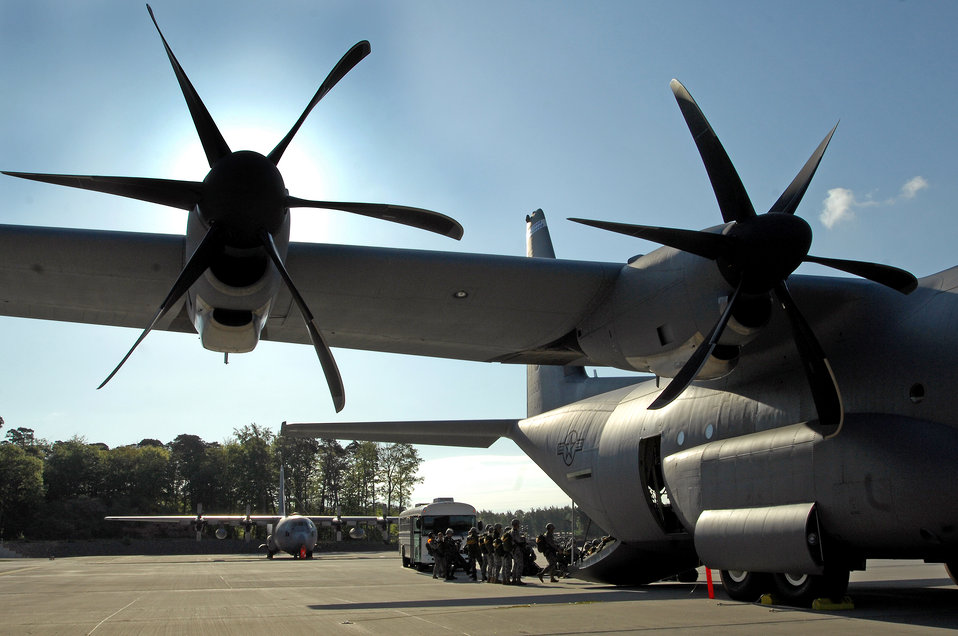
Airmen, Soldiers make first jump from Ramstein C-130J

Airmen and Army paratroopers prepare to load for the first C-130J Super Hercules personnel drop from Ramstein Air Base, Germany.